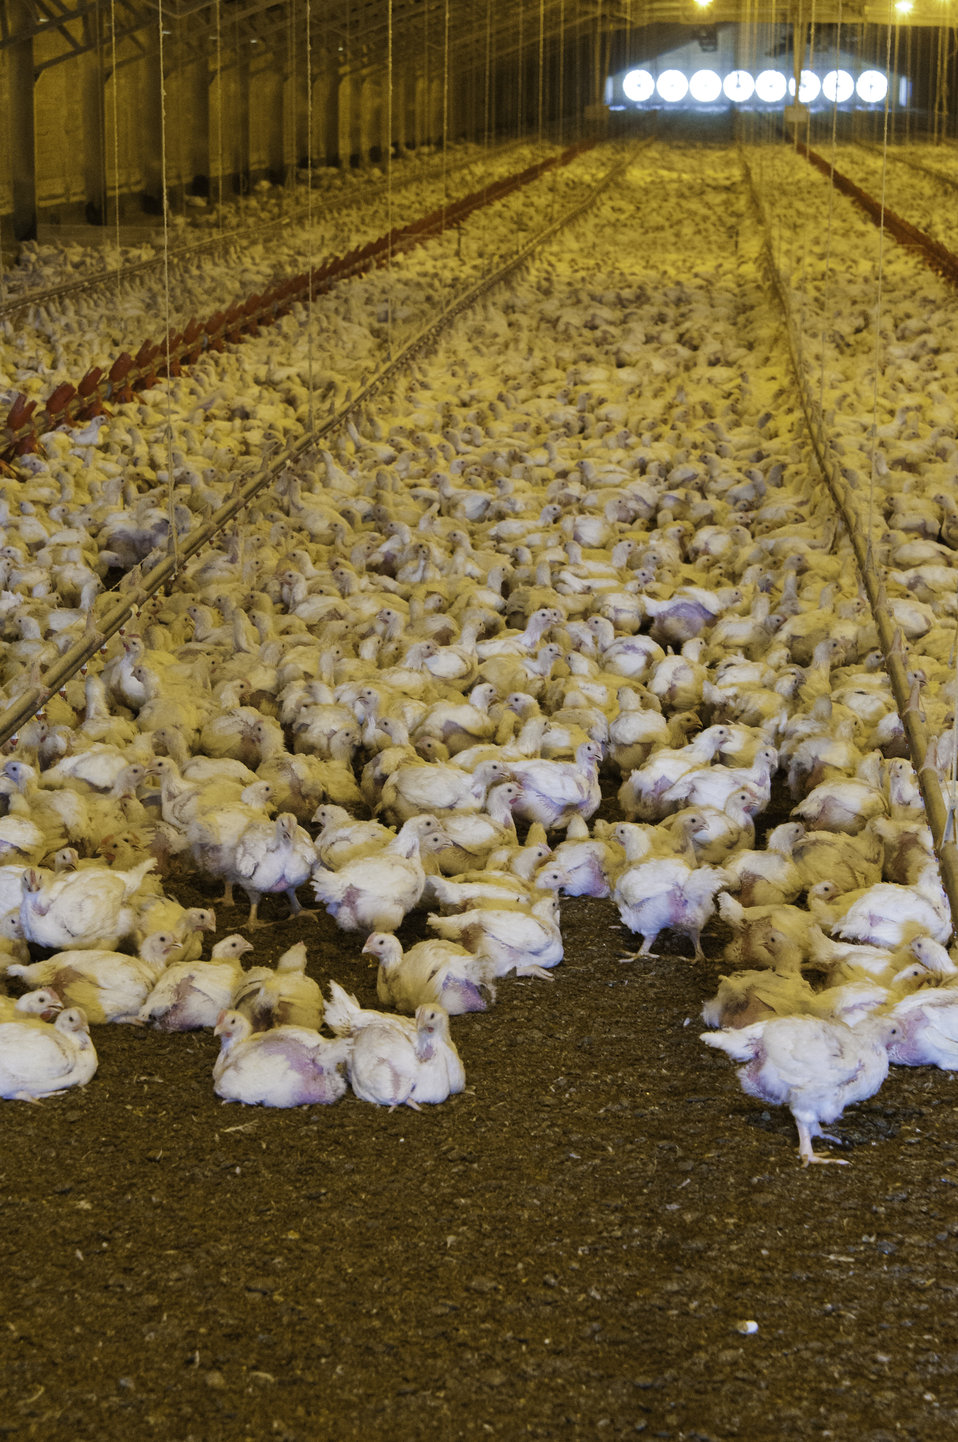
Broiler chickens are raised in a chicken house on the Bobby Morgan chicken Farm in Luling, TX on Aug. 23, 2013.